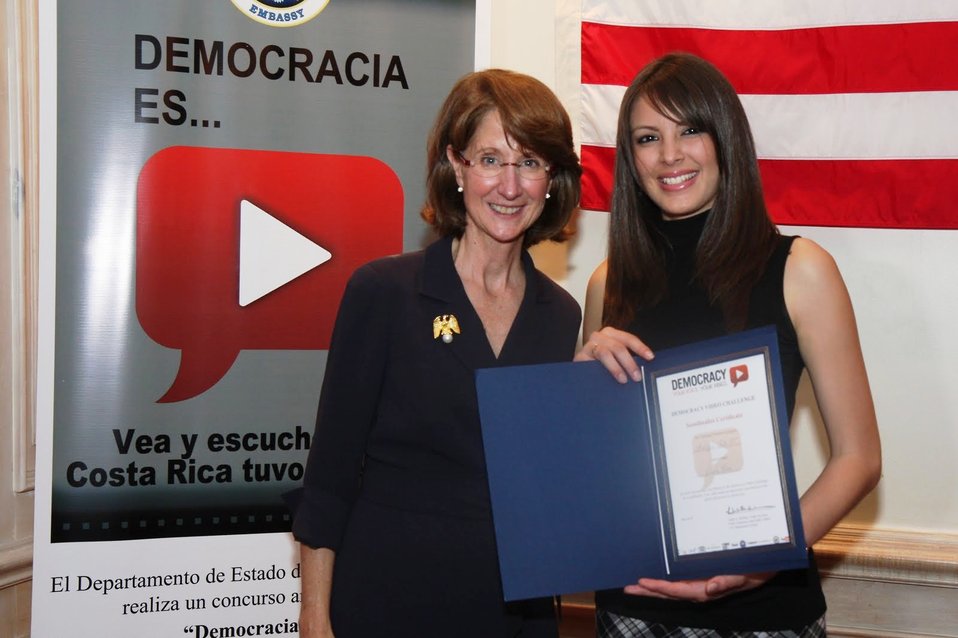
Ambassador Andrew Gives a Certificate to a Democracy Video Challenge Participant

U.S. Ambassador to Costa Rica Anne Slaughter Andrew gives a certificate of appreciation to a participant in the 2009 and 2010 Democracy Video Challenge during the U.S. Embassy San Jose in Costa Rica’s U.S. Independence Day celebration on July 2, 2010, at the Hotel Intercontinental in Escazu, Costa Rica.